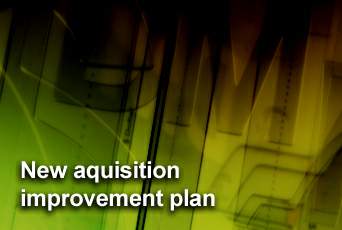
New acquisition improvement plan announced

Officials have announced an acquisition improvement plan designed to serve as the strategic framework to modernize and recapitalize the service's air, space and cyber systems.